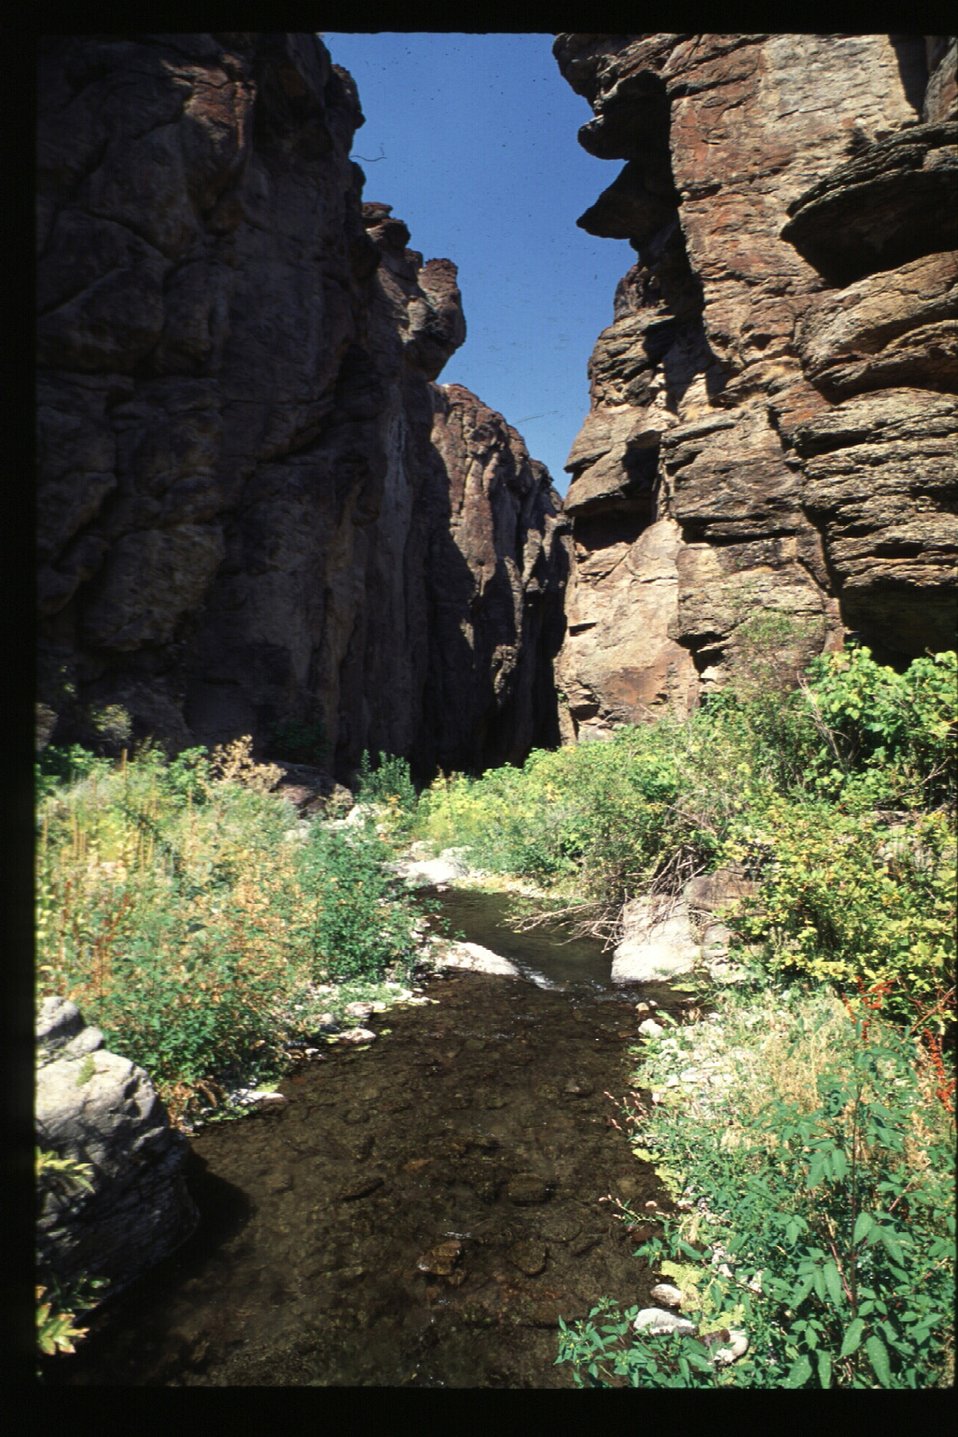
Succor Creek Rangeland Four Rivers Field Office LSRD Lower Snake River District